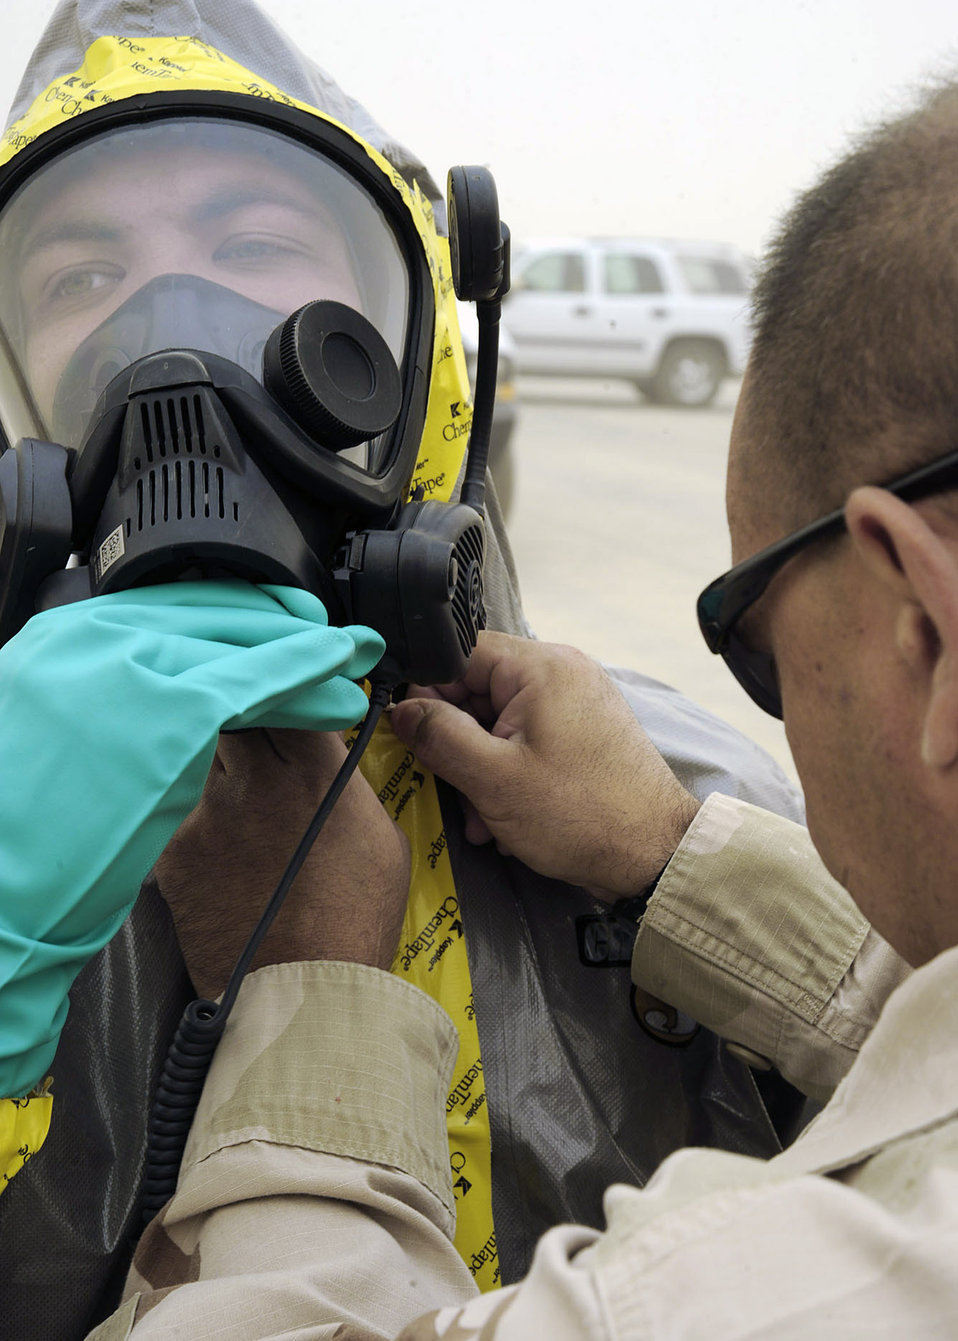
Inspecting the mail

Tech. Sgt. Peter Mickiewicz secures a piece of chemical tape around the mask of Senior Airman Tyrone Fisher recently at Camp Stryker, Iraq. Airman Fisher is set to inspect mail that has been improperly labeled, doesn't have a return address or has been lost in the system. After the inspection, the mail can be processed and go to its intended destination. Sergeant Mickiewicz is deployed from the New Hampshire Air National Guard's 157th Air Refueling Wing. Airman Fisher is deployed from the Indiana Air National Guard's 181st Intelligence Wing, and is a native of Indianapolis. Both Airmen are assigned to the 447th Expeditionary Civil Engineer Squadron.